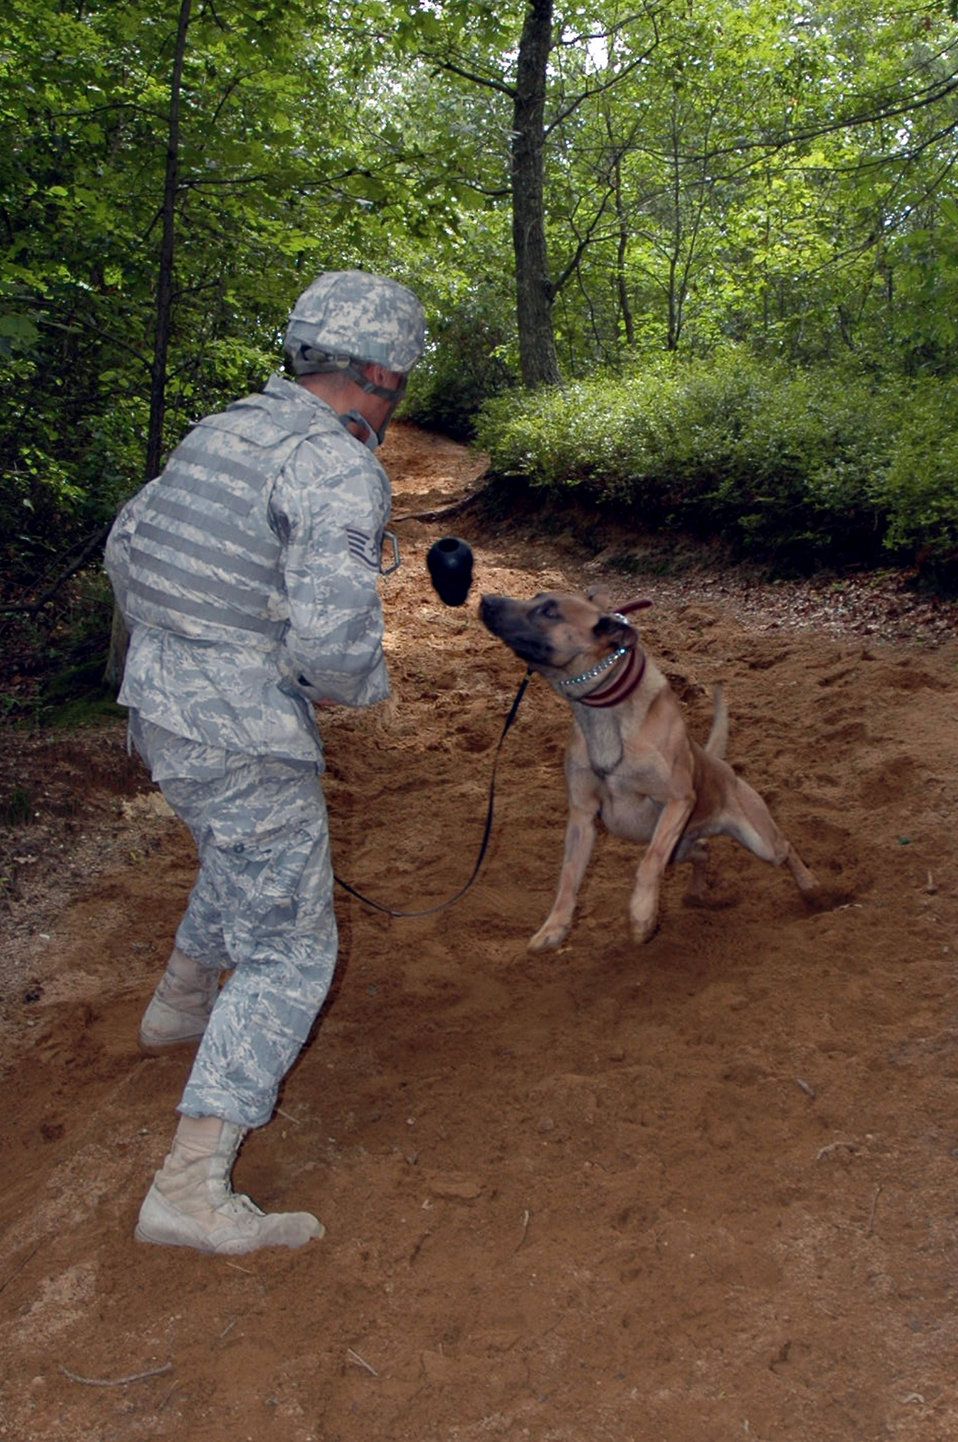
Teaching K-9 detection tactics

Staff Sgt. Matthew Hernandez rewards his military working dog, Grant, during detection techniques training in the Air Force Phoenix Warrior Training Course July 10 at Fort Dix, N.J. Phoenix Warrior is taught by members of the Air Force Expeditionary Center's Expeditionary Operations School and the 421st Combat Training Squadron. Sergeant Hernandez is from Royal Air Force Lakenheath, England.